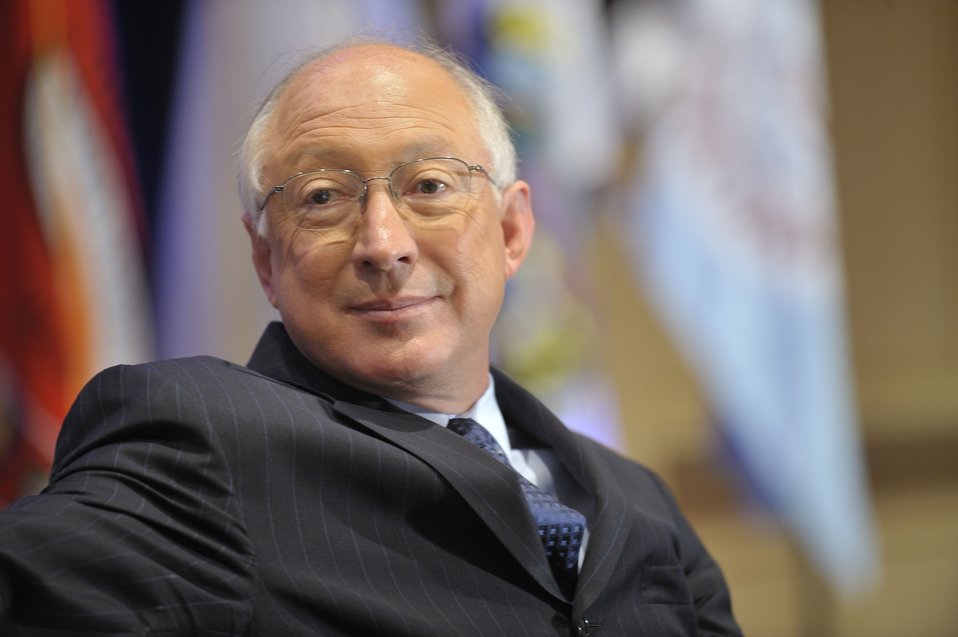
Tribal Energy Summit

DOI Secretary Salazar